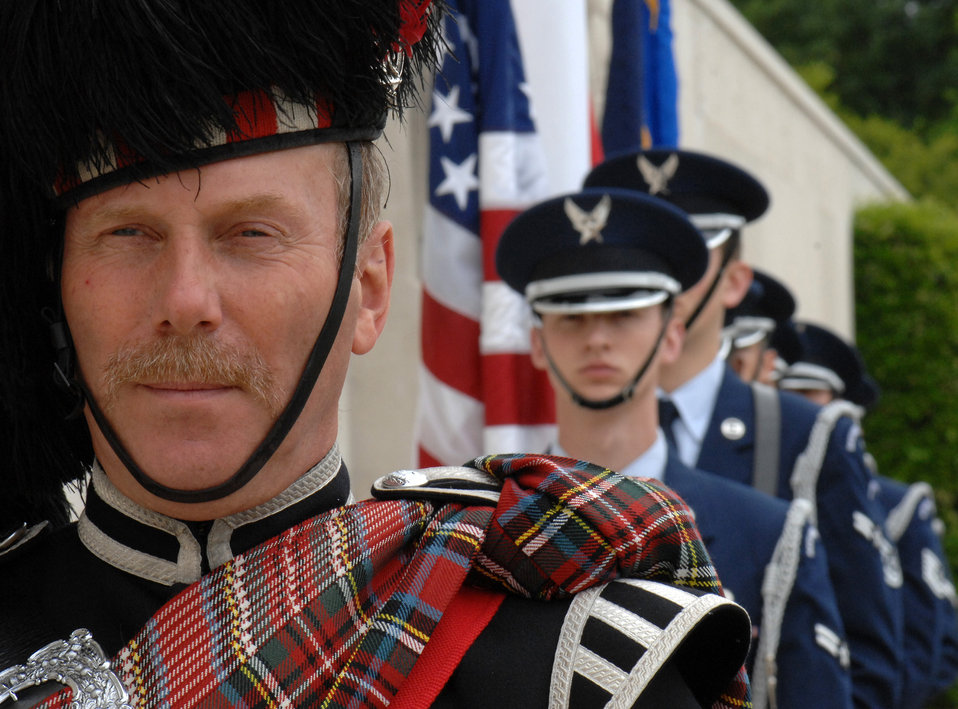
Paying respect

Piper Dave Harper prepares to march May 25 with the Royal Air Force Mildenhall Honor Guard Colors Team at the Madingley American Cemetery Memorial Day ceremony in Cambridge, England. The colors team participated in a full-honors tribute to the servicemembers laid to rest on British soil.